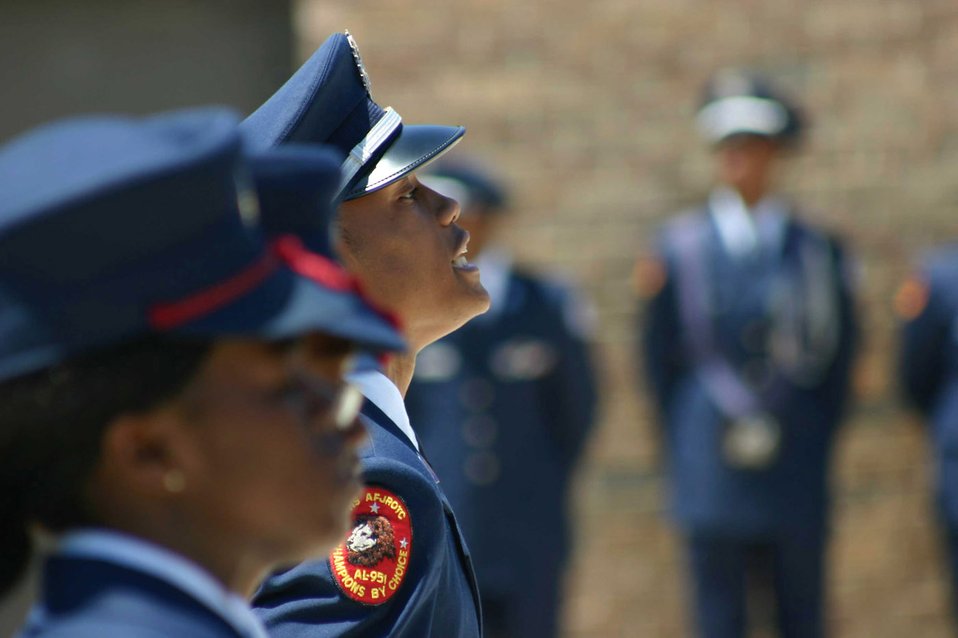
AFOATS celebrates 10 years

Cadet Antonio Thompson, from Prattville High School's Junior ROTC unit AL-951, calls cadence as his column of cadets march in a drill demonstration. Members of the Air Force Officer Accession and Training Schools staff participated in various activities earlier this month highlighting all echelons of the organization.